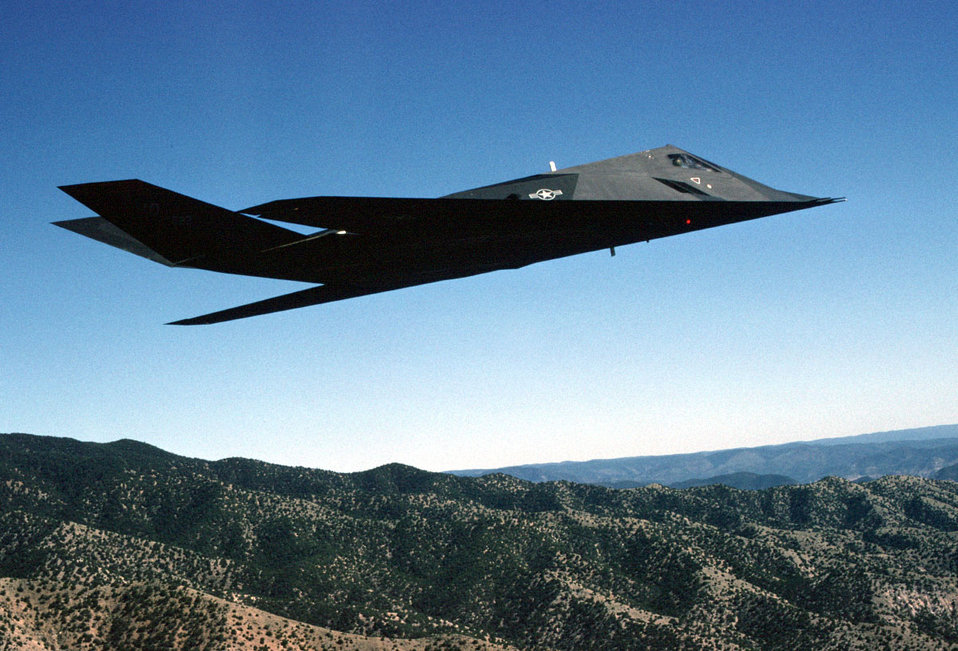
Iron Knights

NEW MEXICO -- The F-117A Nighthawk Stealth fighter from the 49th Fighter Wing, 9th Fighter Squadron